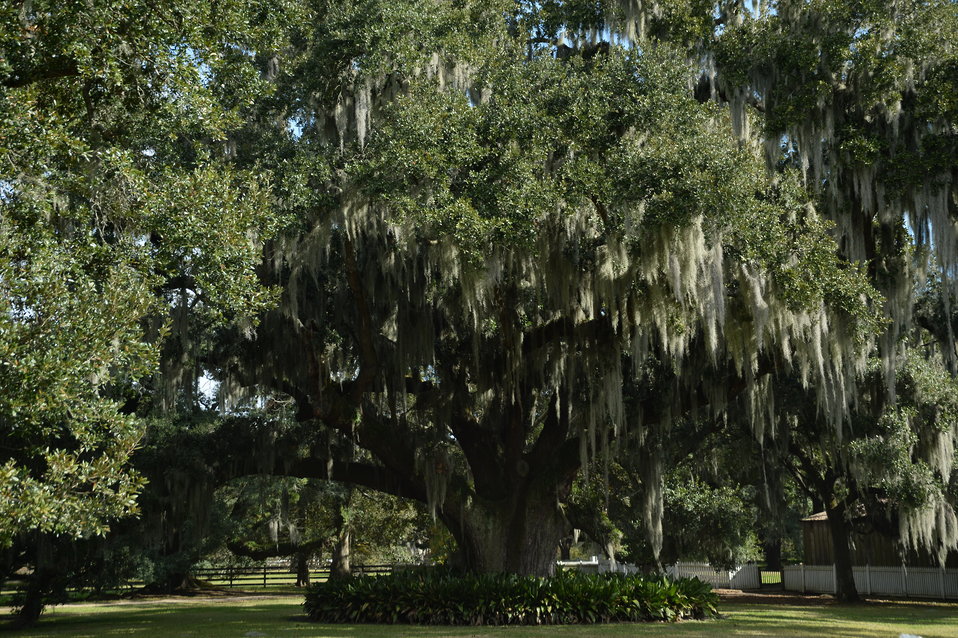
There are many scenic views surrounding New Orleans, LA on Tuesday, Nov. 19, 2013.